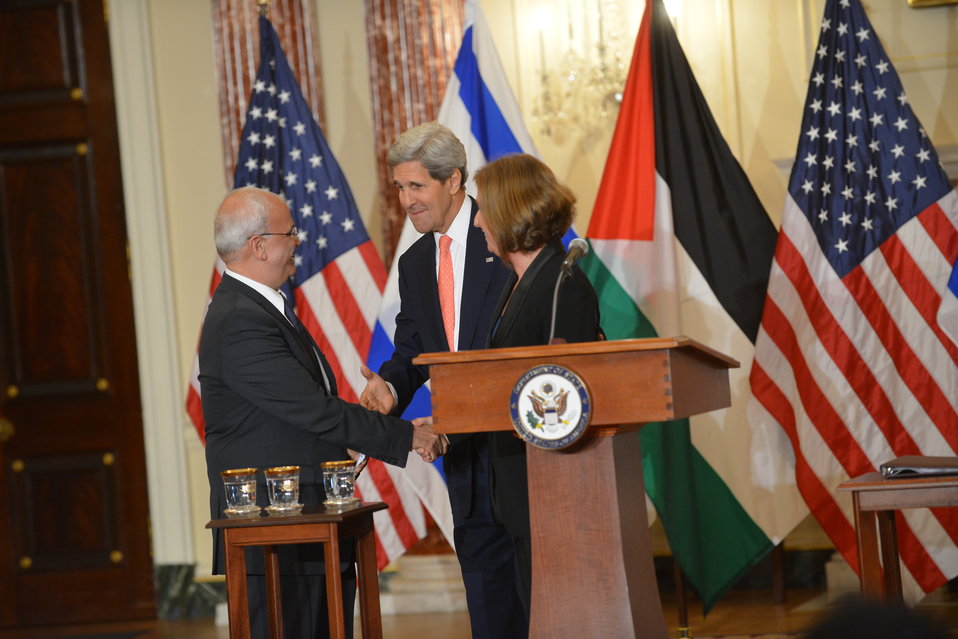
Secretary Kerry, Israeli Justice Minister Livni, and Palestinian Chief Negotiator Erekat Shake Hands

U.S. Secretary of State John Kerry, Israeli Justice Minister Tzipi Livni, and Palestinian Chief Negotiator Saeb Erekat shake hands after addressing reporters on the Middle East Peace Process Talks at the U.S. Department of State in Washington, D.C., on July 30, 2013.